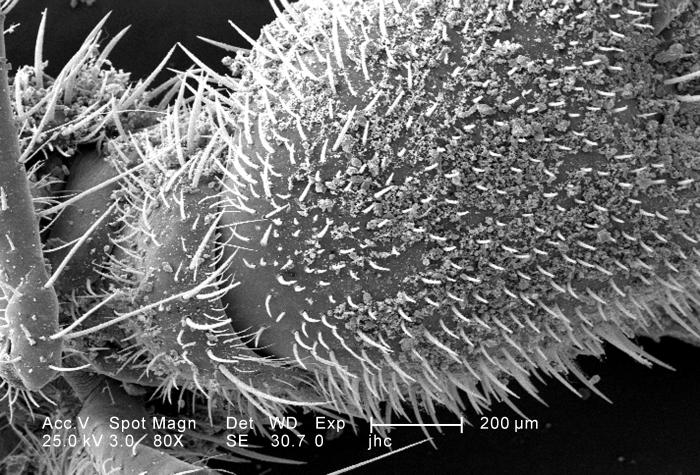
Under a low magnification of 80X, twice that of PHIL 11802, this scanning electron micrograph (SEM) revealed the ultrastructural features found on the ventral exoskeletal surface of this larval-staged antlion, at the junction of the head and thoracic regions. This larva is sometimes referred to as a 'doodlebug', because of the trails it leaves in the soft sand as it hunts for prey. This arthropod, i.e., jointed legs, undergoes dramatic morphologic changes when it metamorphoses into a beautiful flying antlion lacewing.